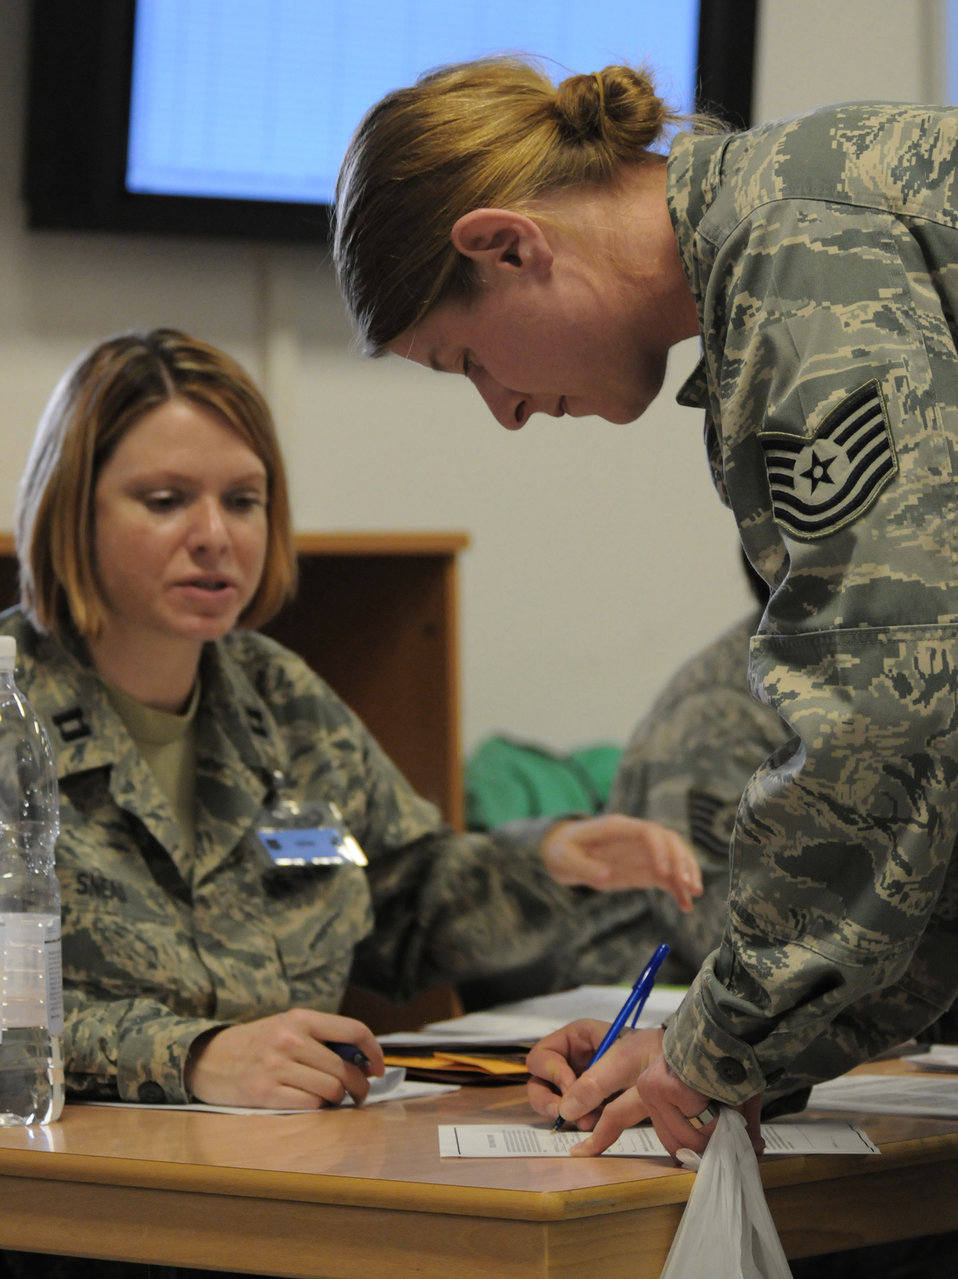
Operation Odyssey Dawn

SPANGDAHLEM AIR BASE, Germany ? A 52nd Component Maintenance Squadron tech. sgt. signs paperwork as she processes through the personnel deployment function line here before leaving in support of Operation Odyssey Dawn March 20. Joint Task Force Odyssey Dawn is the U.S. Africa Command task force established to provide operational and tactical command and control of U.S. military forces supporting the international response to the unrest in Libya and enforcement of United Nations Security Council Resolution (UNSCR) 1973. UNSCR 1973 authorizes all necessary measures to protect civilians in Libya under threat of attack by Qadhafi regime forces. JTF Odyssey Dawn is commanded by U.S. Navy Admiral Samuel J. Locklear, III.